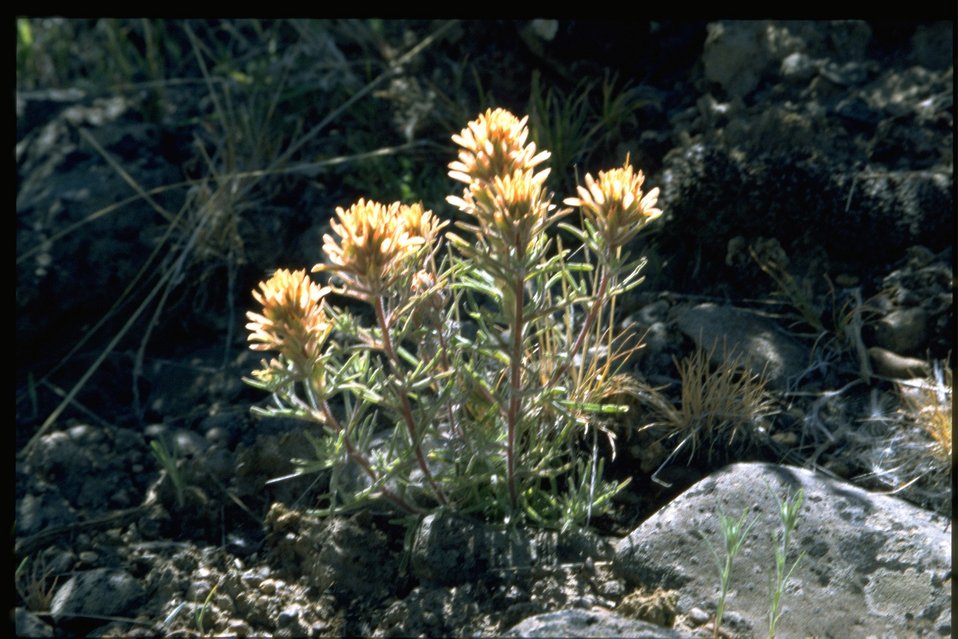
Medium shot of Indian Paintbrush wildflower.